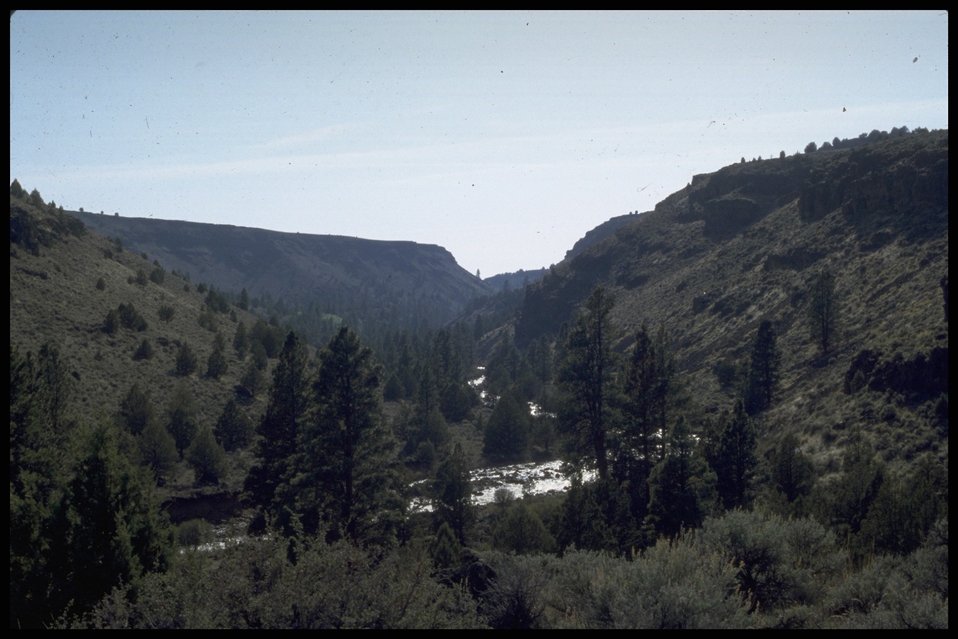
Doherty Slide, Lakeview District.